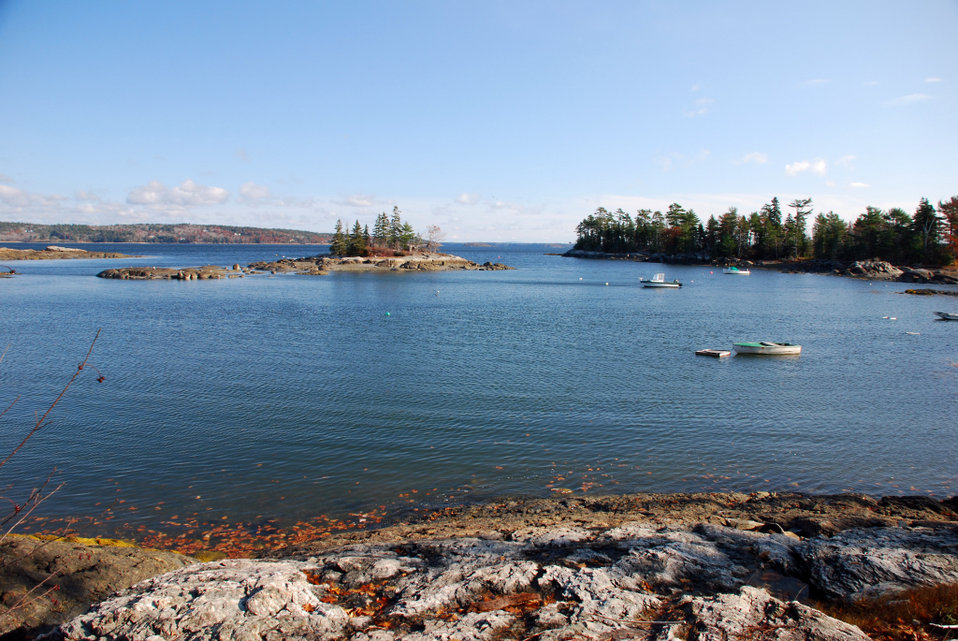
Near-shore environment

Blue Hill Harbor, Blue Hill, Maine